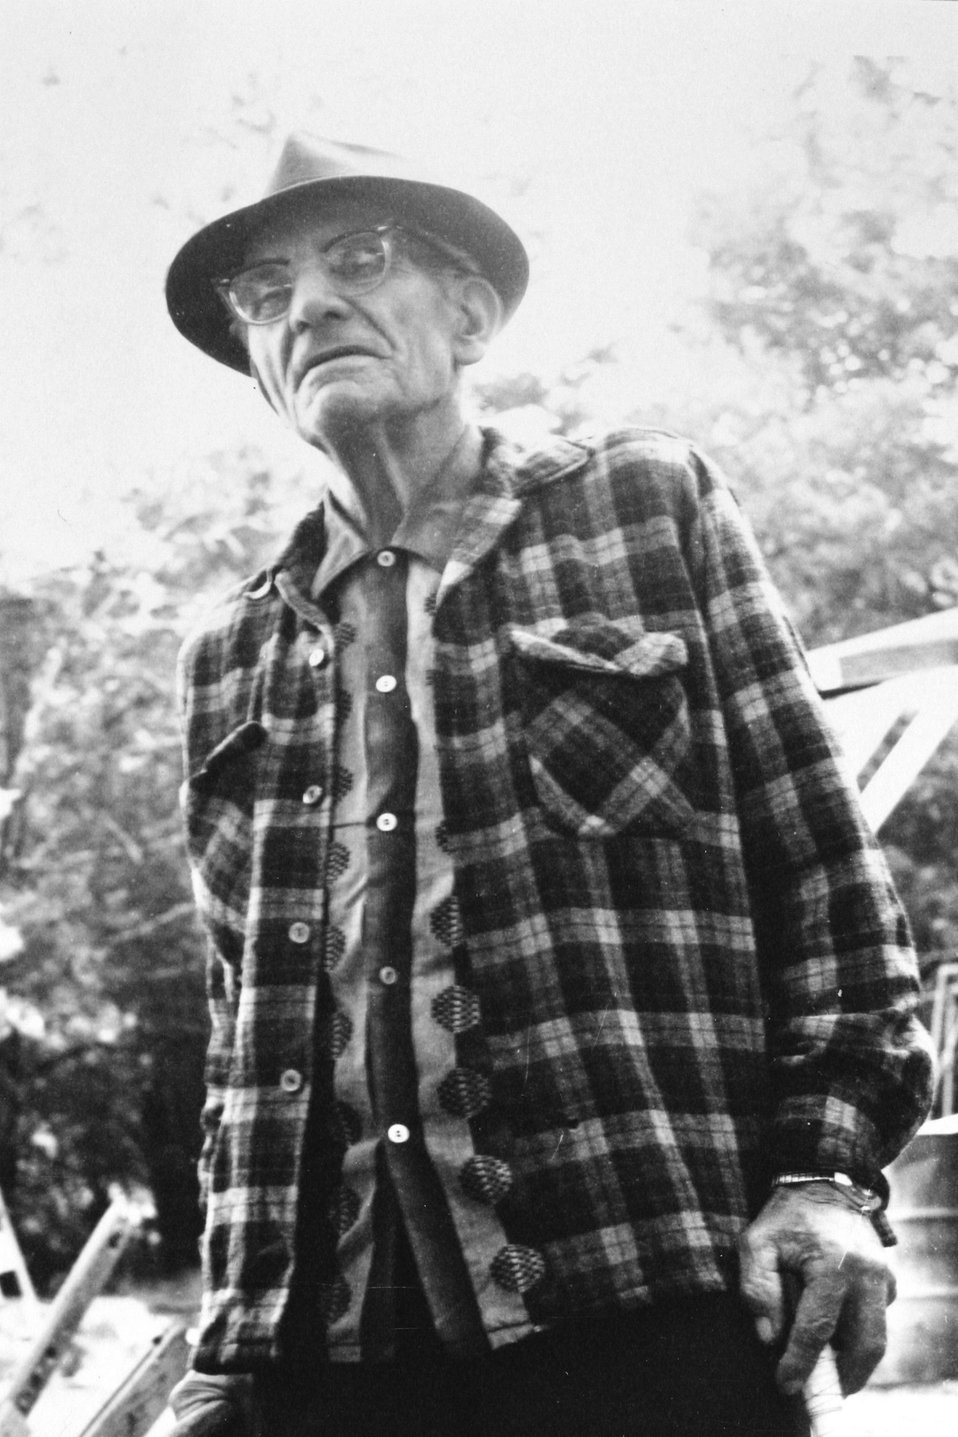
Ivin Billings C. 1977